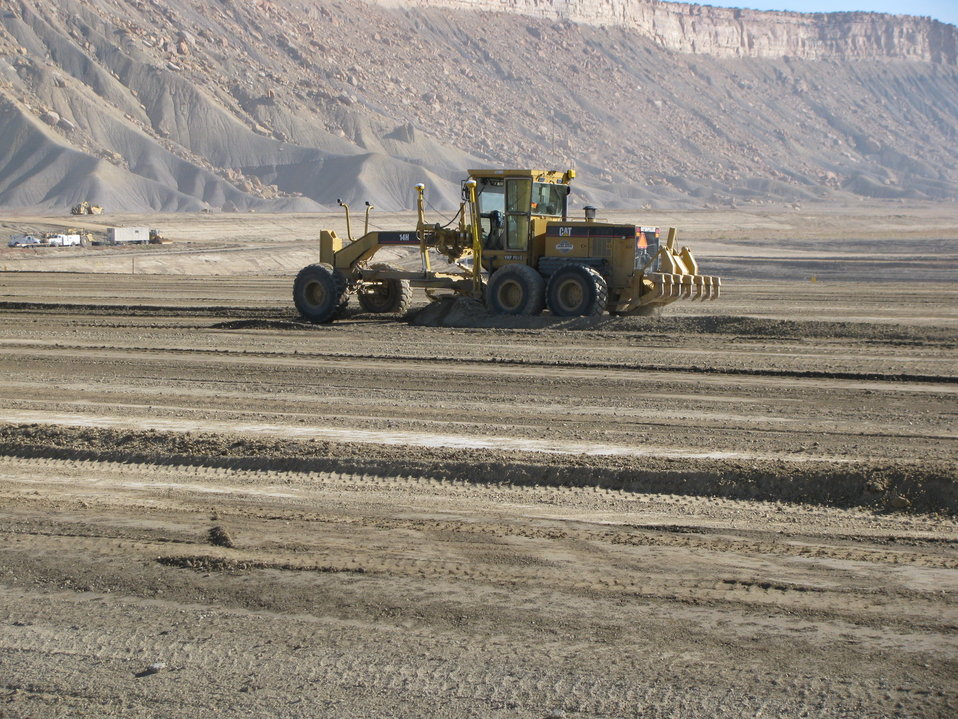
Crescent Junction disposal cell for uranium mill tailings.